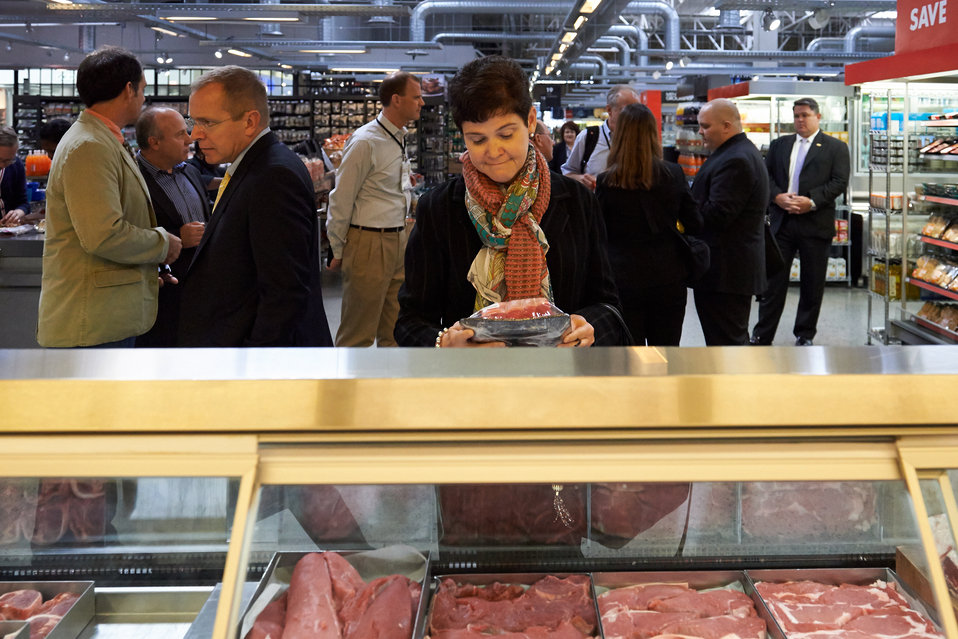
Agriculture Deputy Secretary Krysta Harden walks through market in Johannesburg, South Africa on Tuesday, Sep. 17, 2013. Agriculture Deputy Secretary Krysta Harden led a trade mission to the Sub-Saharan Africa Business Round Table to promote U. S. agricultural trade and investment in the region, which is a long-term goal of the initiative. The trade mission includes 17 U.S. companies and 15 agricultural trade associations that represent a variety of products such as snack foods, beverages, fruit, nuts, and more.